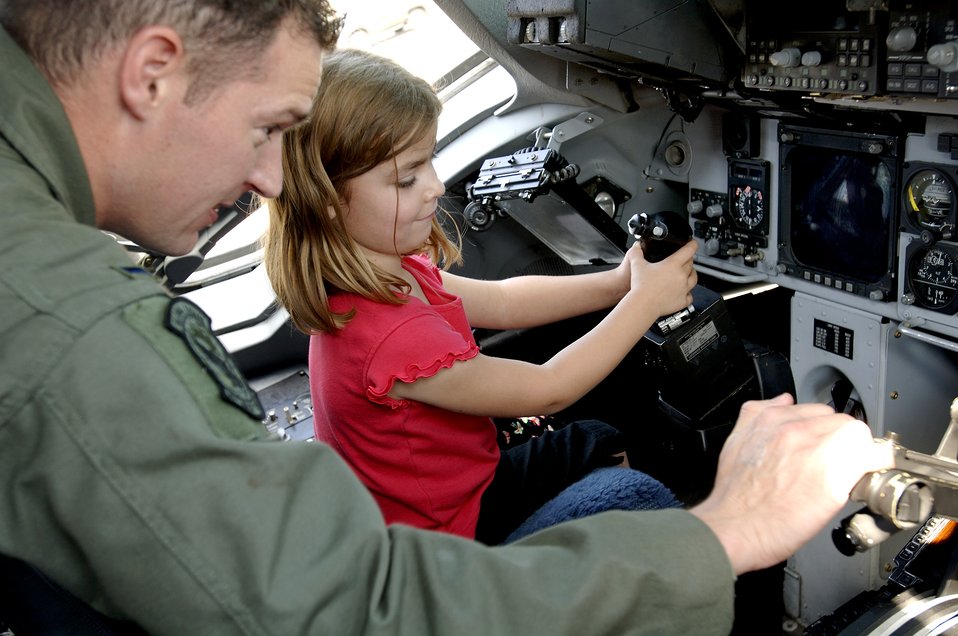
Air Power Over Hampton Roads Air Show 2006

Second Lt. Josh Watkins shows 6-year old Mason Elliott how to increase the speed of a C-17 Globemaster III during the Air Power over Hampton Roads Air Show on May 6, 2006, at Langley Air Force Base, Va.